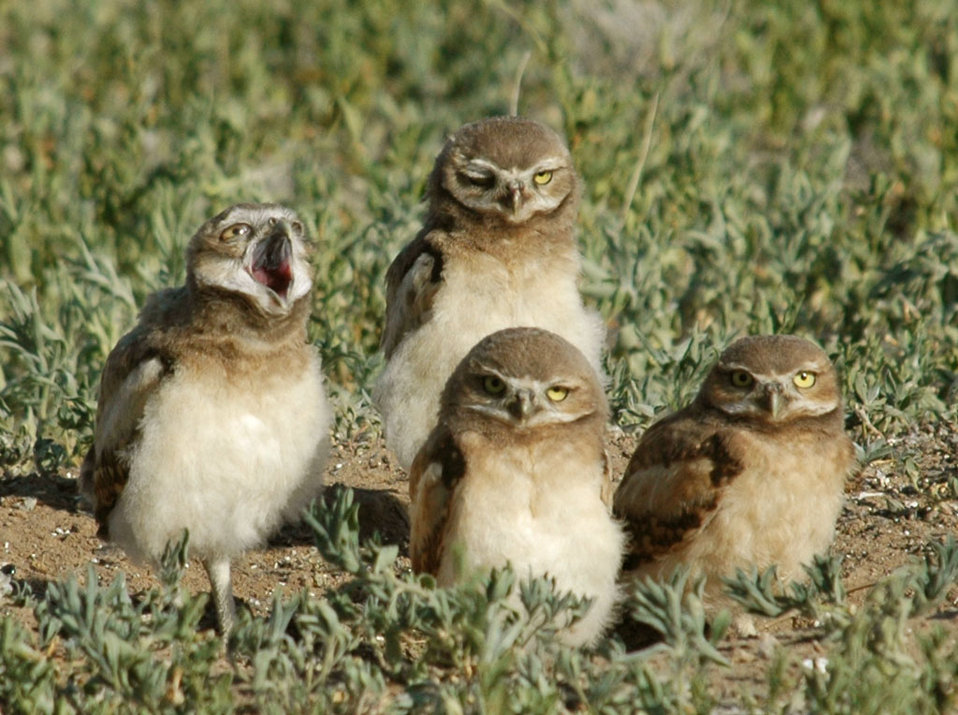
burrowing owls in summer

Rocky Mountain Arsenal National Wildlife Refuge, CO